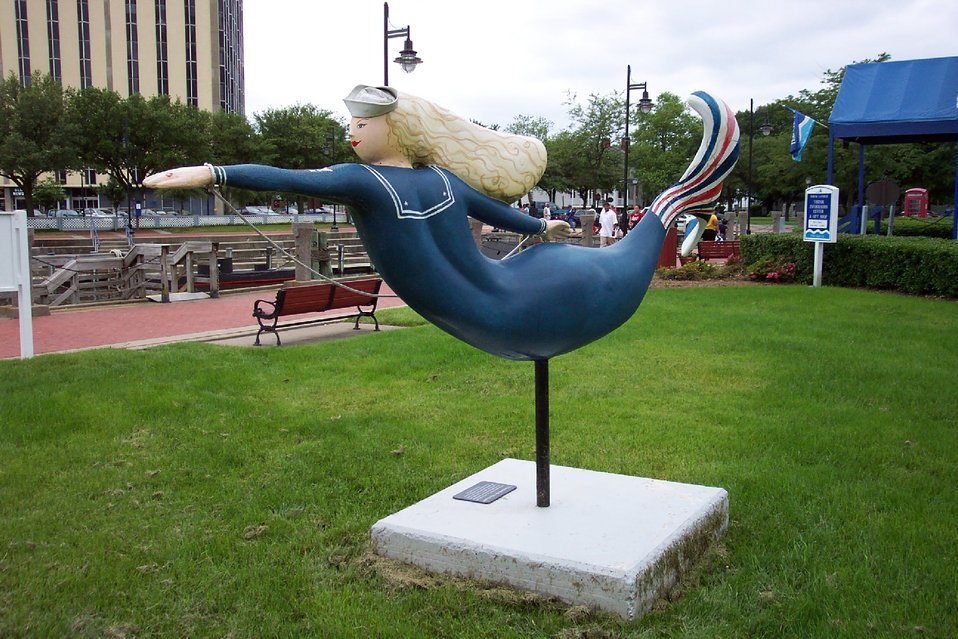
A Portsmouth sailor mermaid.